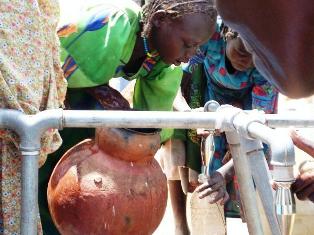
A Chadian IDP Girl Fetches Water

A Chadian IDP girl near Gouroukoun IDP site fetches water from a recently opened water tap in Chad on October 12, 2007. In fiscal year 2010, two principal factors drove PRM’s development of a humanitarian strategy for Chad and the region. The first was security. Despite the presence of UN peacekeepers in Chad, both civilians and humanitarian workers have been subjected to an increasing level of banditry: robbery, carjackings, and at times even kidnapping and murder. Now the Chadian government has asked the UN mission to leave the country, an event that would further expose humanitarians and refugees to danger. The second factor was eastern Chad’s qualification as a protracted refugee situation, meaning it has been in existence for over five years. Even with some hopeful political steps towards peace in Darfur in early 2010, the refugees will likely remain in Chad for several more years. With lifesaving services well-established in the camps, therefore, PRM has shifted its focus to programs that provide a longer-term benefit, such as education and vocational training.